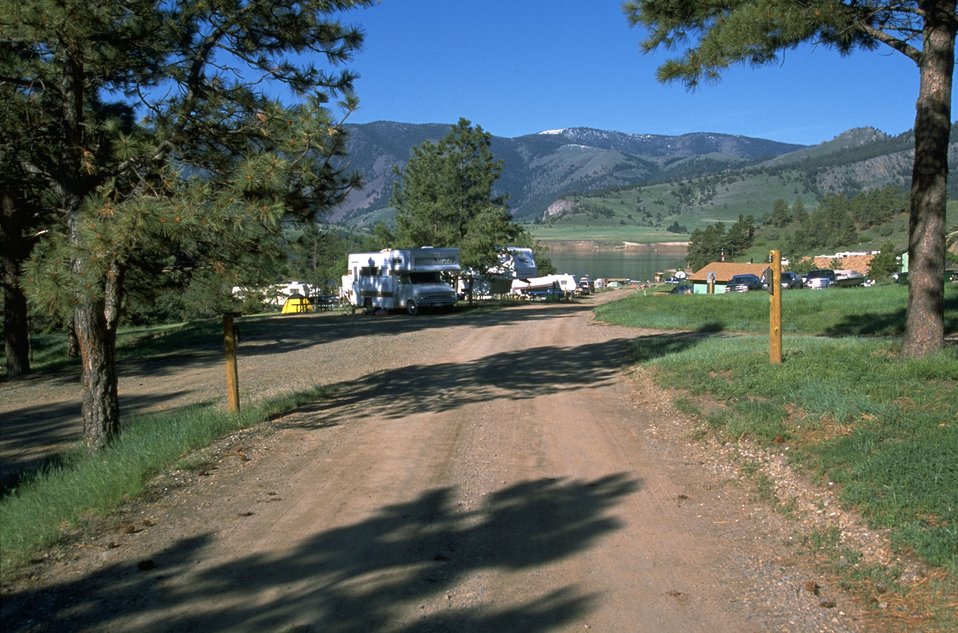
Campers at Log Gulch Campground